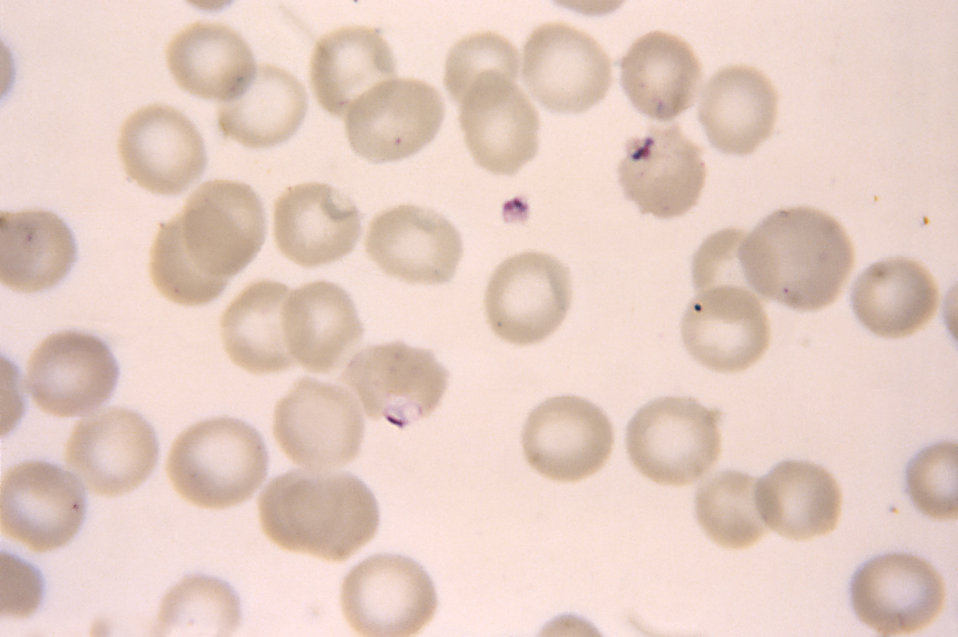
This thin film micrograph revealed two P. falciparum rings, Maurer's dots, and crenated red blood cells.